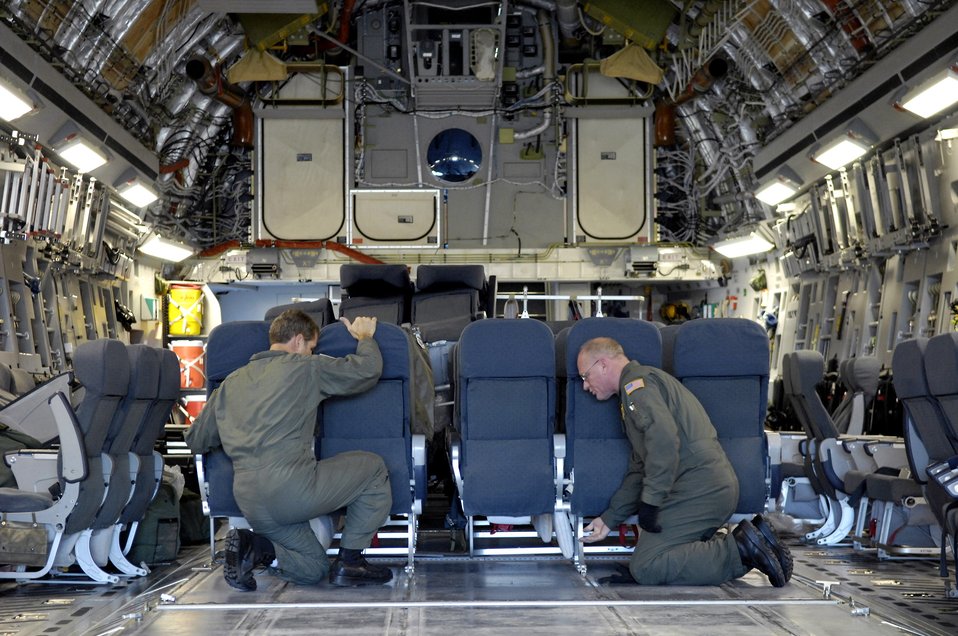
Getting ready to fly to McMurdo

Senior Master Sgt. Jim Masura (left) and Master Sgt. Lyle Lane install passenger seats on their C-17 Globemaster III for the upcoming winter fly-in missions to Antarctica at Christchurch, New Zealand, Aug. 19. This C-17 and 31 Airmen from McChord Air Force Base, Wash., will begin the annual winter fly-in augmentation of scientists, support personnel, food and equipment for the U.S. Antarctic Program at McMurdo Station Aug. 20. WinFly is the opening of the first flights to McMurdo station, which closed for the austral winter in February.